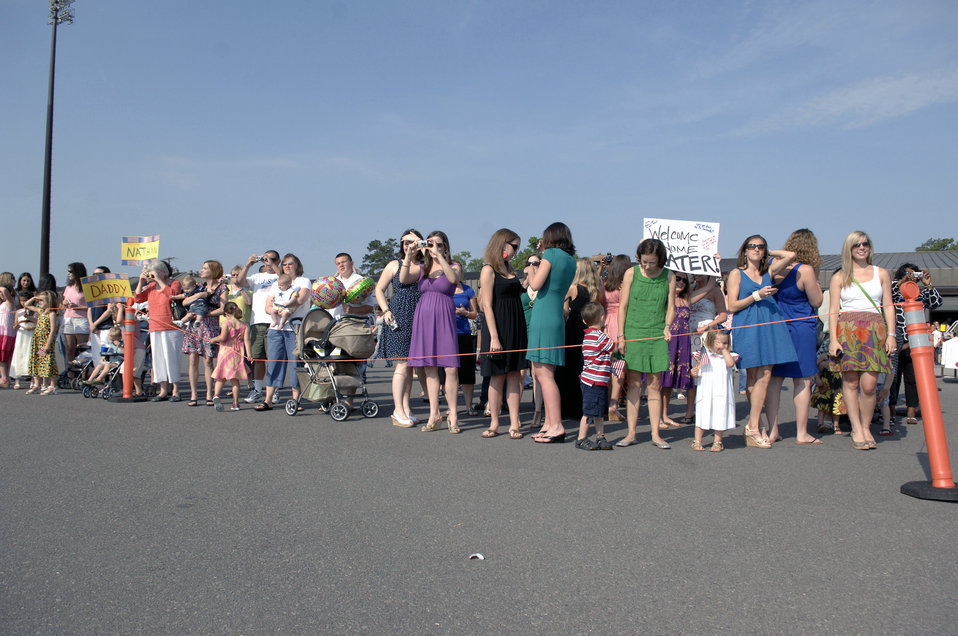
Mission complete: Charleston Airmen return home

Family and friends wait to reunite with Airmen from the 16th Airlift Squadron May 3 at Charleston Air Force Base, S.C. More than 140 Airmen from the 16th AS returned from their 120-day deployment to the Middle East in support of operations Enduring Freedom and Iraqi Freedom and operations in the Horn of Africa.